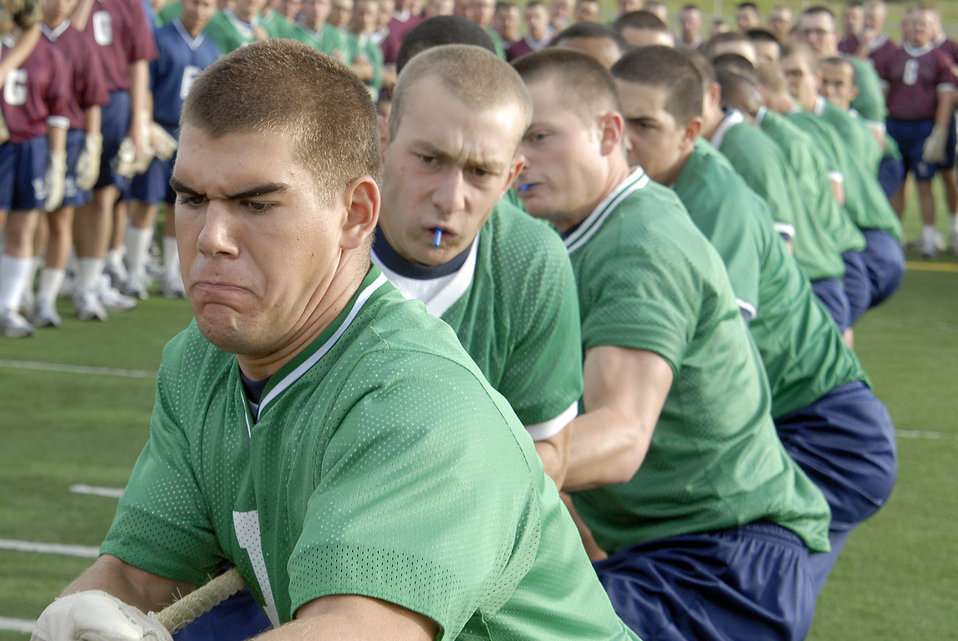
Class of 2013 Field Day

Basic cadet trainees with the U.S. Air Force Academy's Class of 2013 participate in the tug of war during Field Day activities here today. About 1,344 trainees competed in various athletic events during Field Day, including tug
of war, log relays, steeple chase and sprint relays. Basic cadet training started June 25 and continues through Aug. 1. The new cadets are in their first month of training and are learning about Air Force heritage, honor, discipline and Air Force core values, in addition to improving physical
fitness. The fall academic semester begins Aug. 6.